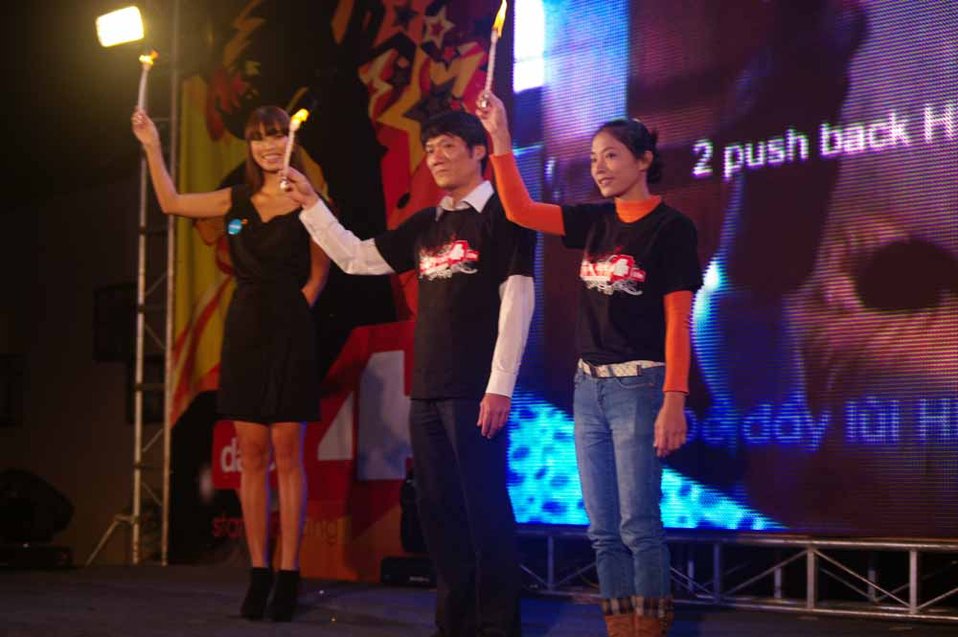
dance4life, Hanoi